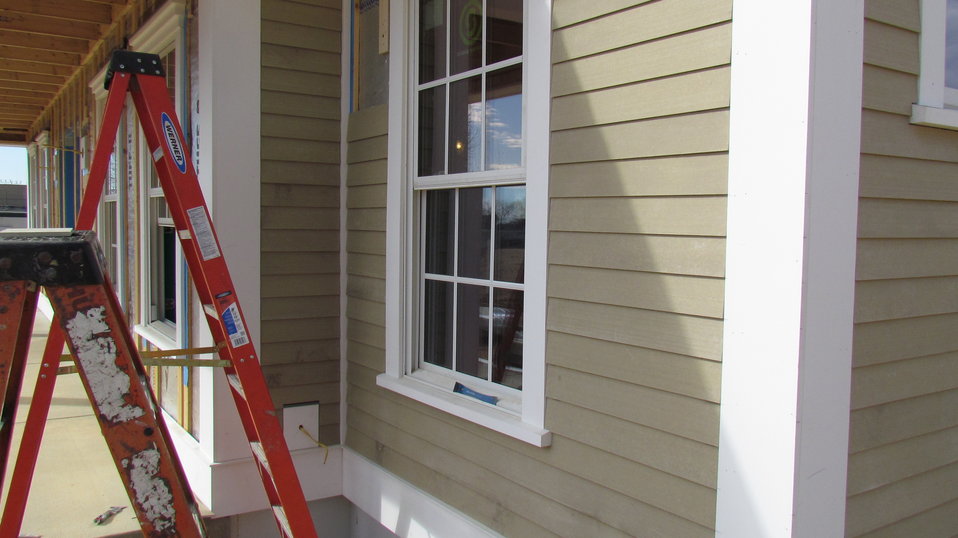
Installation of fiber-cement board siding on front of facility.